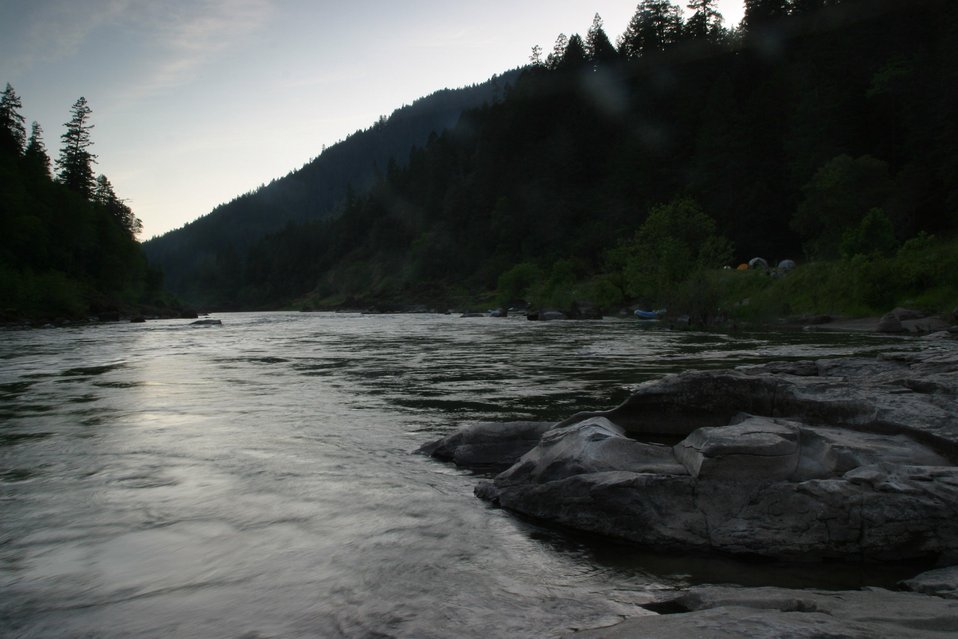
Wild section of the Rogue River from Grave Creek to Foster Bar May 19 to May 22.